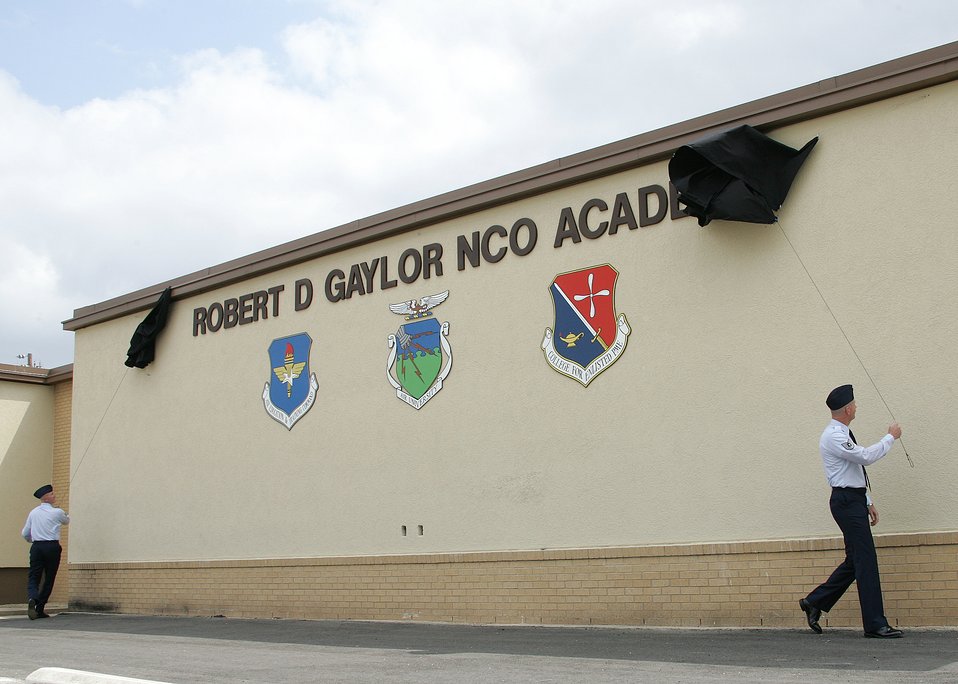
Lackland NCO academy renamed to honor CMSAF Gaylor

Tech. Sgts. Scott Ransom and William Pyle pull back the curtain unveiling the Robert D. Gaylor NCO Academy on Thursday, March 30, 2006, at Lackland Air Force Base, Texas. The dedication was in honor of the fifth chief master sergeant of the Air Force, Robert D. Gaylor.